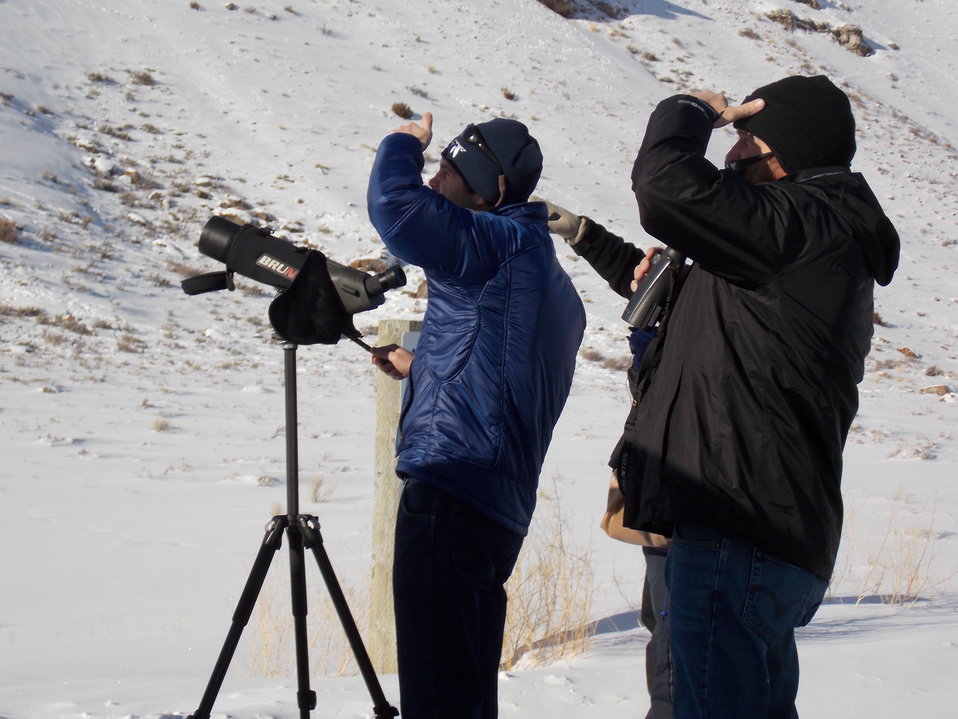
A Synchronized Wildlife Viewing Pose

A naturalist and tour participant block out the sun on a bright day in order to better search for wildlife.